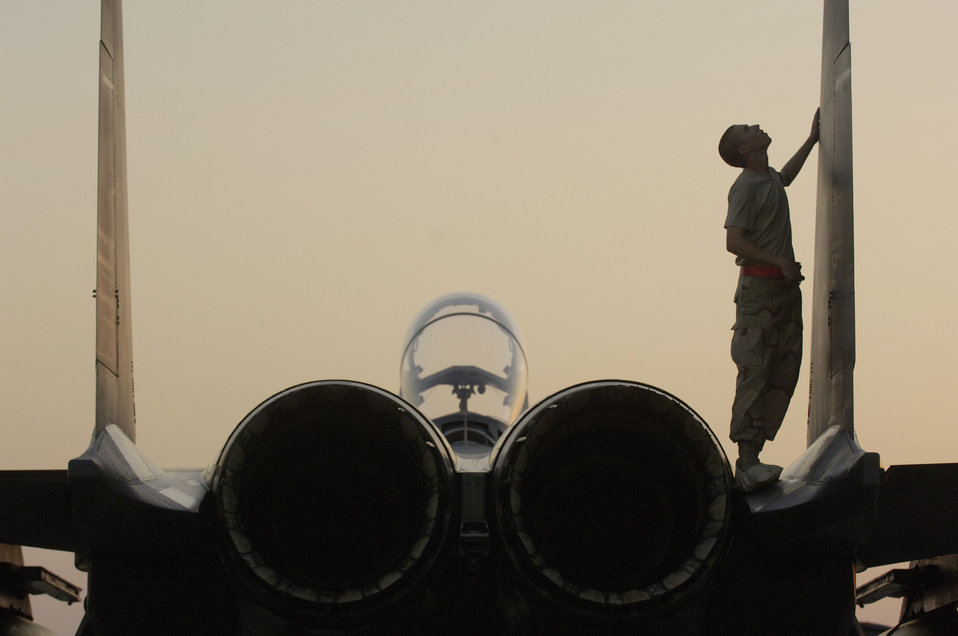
March 24 - 30: The week in airpower

Airman 1st Class Kevin Romer performs a post-flight inspection an F-15E Strike Eagle at a forward-deployed base in Southwest Asia Sept. 21. Airman Romer is an F-15E crew chief assigned to the 494th Aircraft Maintenance Unit.